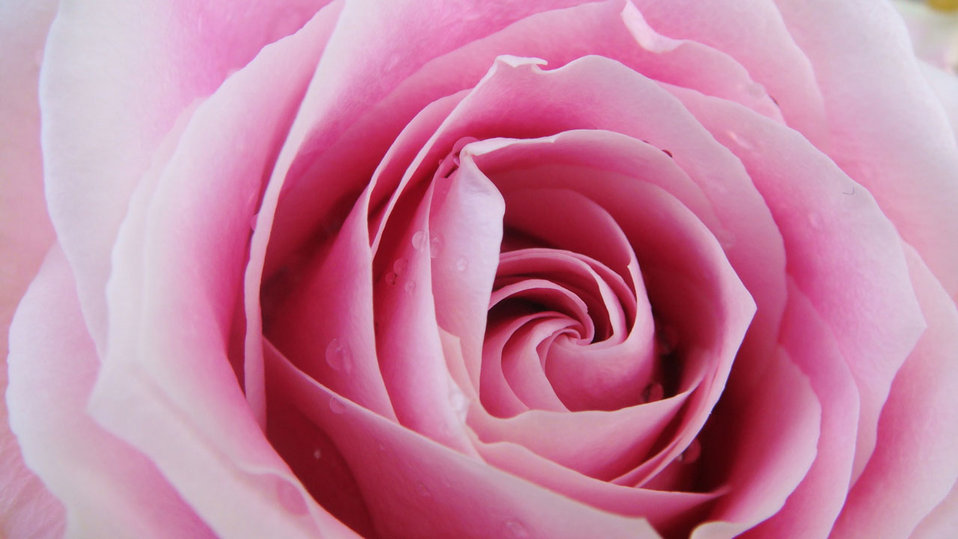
Flower

Beautiful flower with water drops in the sun.